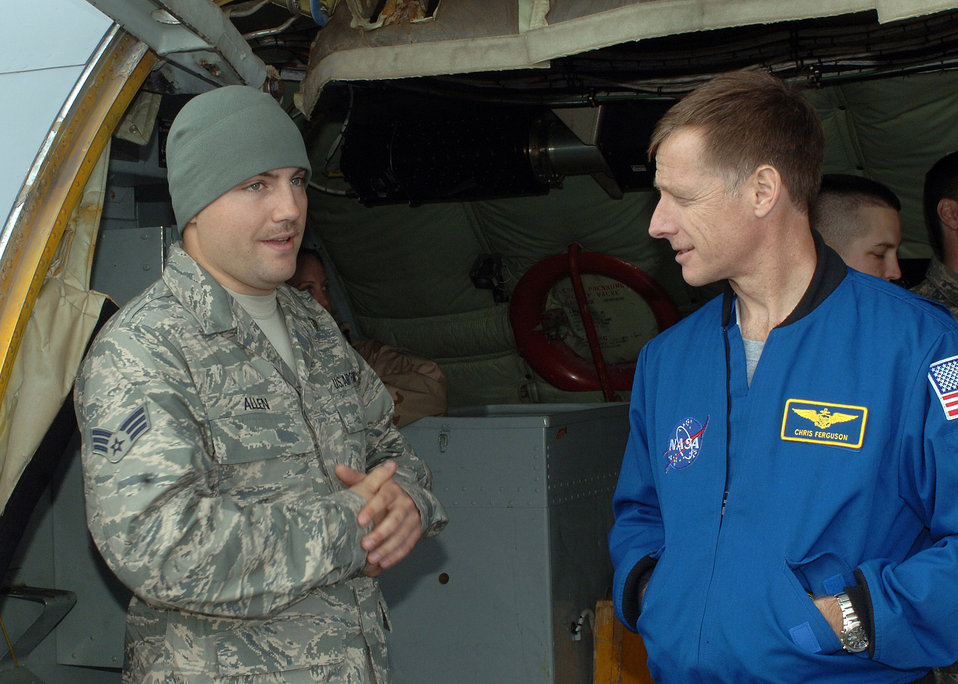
NASA astronauts

Navy Capt. Chris Ferguson, a NASA astronaut, listens to Senior Airman William Allen, a communication and navigation specialist deployed with the 376th Expeditionary Aircraft Maintenance Squadron, discusses the mission of the KC-135 Stratotanker during a visit to Manas Air Base, Kyrgyzstan. The crew of the Space Shuttle Endeavour's STS-126 mission visited Jan. 28.